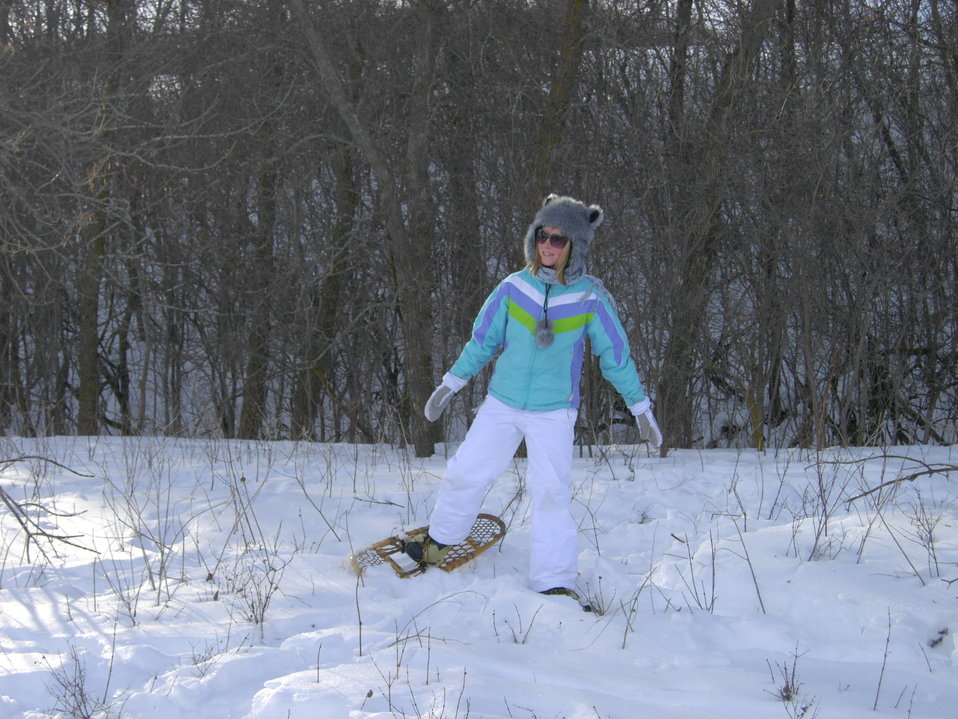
Let's Go Snowshoeing! Jan 29, 2011

Enjoying the powder.